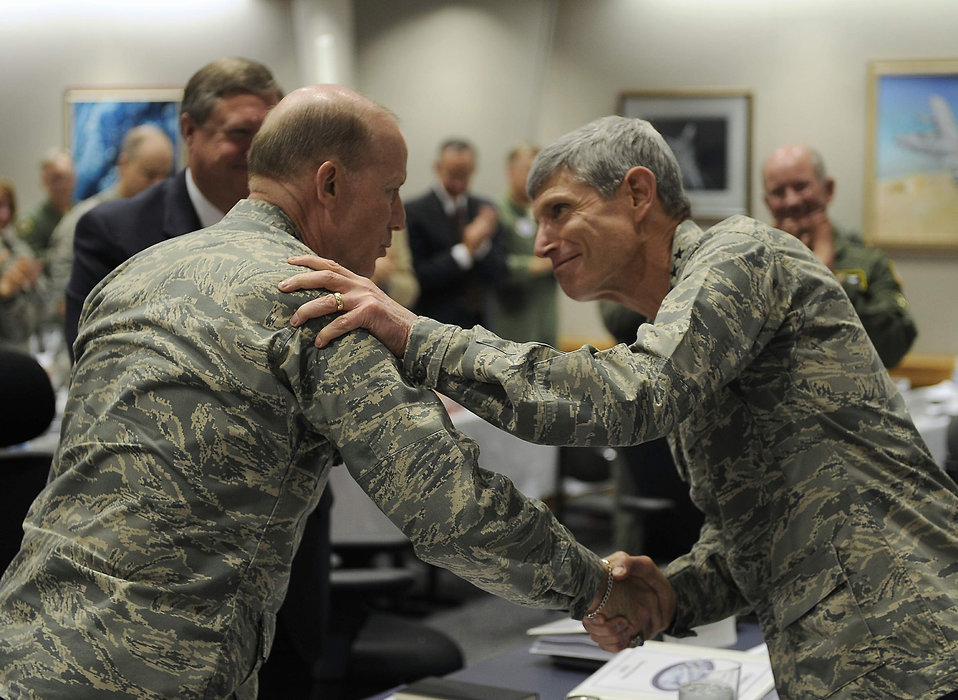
CORONA Top 2009

Air Force Chief of Staff Gen. Norton Schwartz (right) congratulates Air Combat Command's Gen. John Corley during CORONA Top 2009 wrap-up comments at Wright-Patterson Air Force Base, Ohio. General Corley will retire before the next meeting. They and other Air Force senior leaders, spanning each major command and numbered Air Force, met for three days of decisions and discussions. This was the fifth successive year CORONA Top has been hosted at Wright-Patterson.